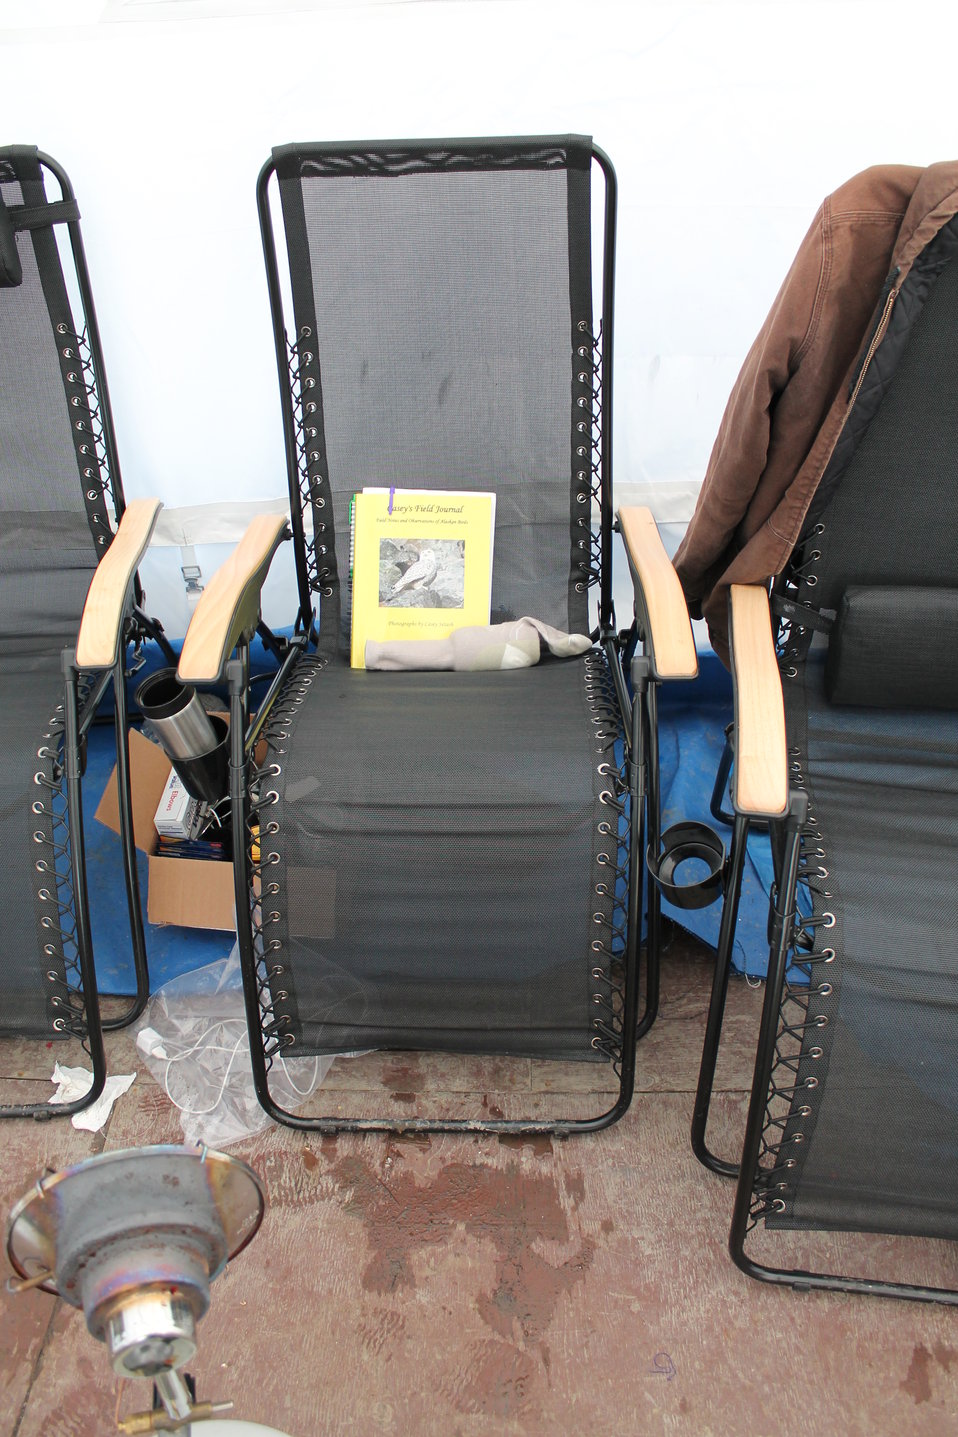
Comfy

Just because you are in a field camp doesn't mean that you can't be comfortable.
How camps are set up and furnished will depend on where the camp is located and any logistical constraints that may come with that area.

USFWS Yukon Delta NWR